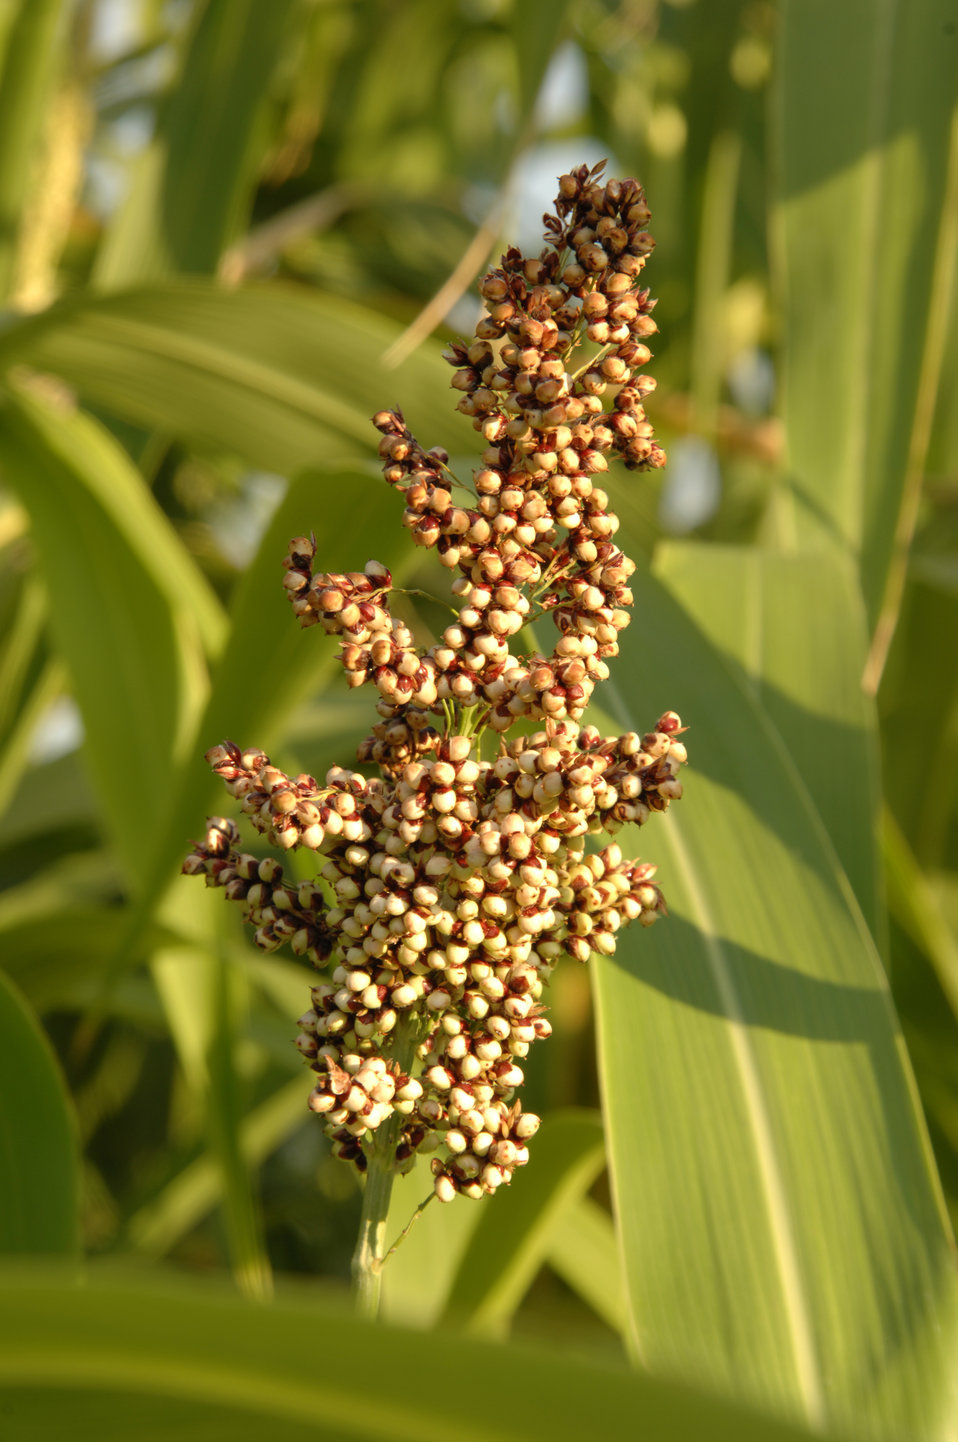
The Power Plant garden at the National Arboretum in Washington, D.C., displays a variety of plants that may provide a valuable and renewable source of bioenergy for America. Bioenergy is a renewable energy made available from materials derived from biological sources. Sorghum is a grain native to northeastern Africa, topical Africa and southern Africa. Sorghum grows in environments too harsh for corn or sugarcane and could be an alternative crop for sugar and grain ethanol production. Texas A & M University System is trying to develop a variety of sorghum that could also be used in the production of cellulosic ethanol. This photograph shows sorghum growing in the Power Plant garden at the National Arboretum in Washington, D.C. on August 19, 2008.